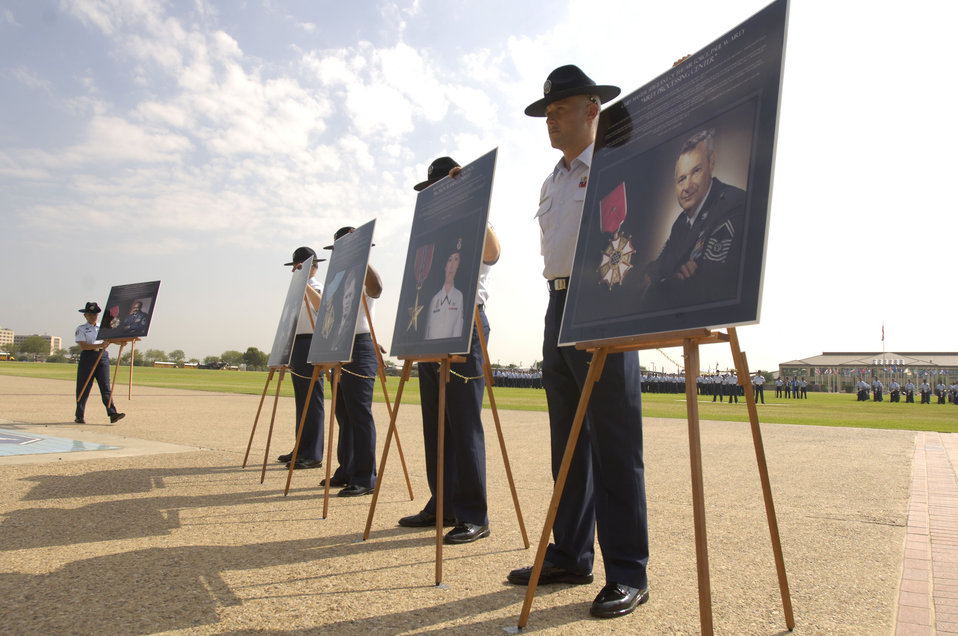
Lackland honors nine enlisted heroes

Military training instructors stand by photographs of former Chief Master Sergeant of the Air Force Paul W. Airey and eight other enlisted heroes who were honored at a Basic Military Training Memorialization Ceremony at Lackland Air Force Base, Texas, on Wednesday, June 14. Several hundred visitors witnessed the ceremony that dedicated nine training facilities in honor of nine enlisted heroes who have served from World War II to present-day operations in the war on terrorism.